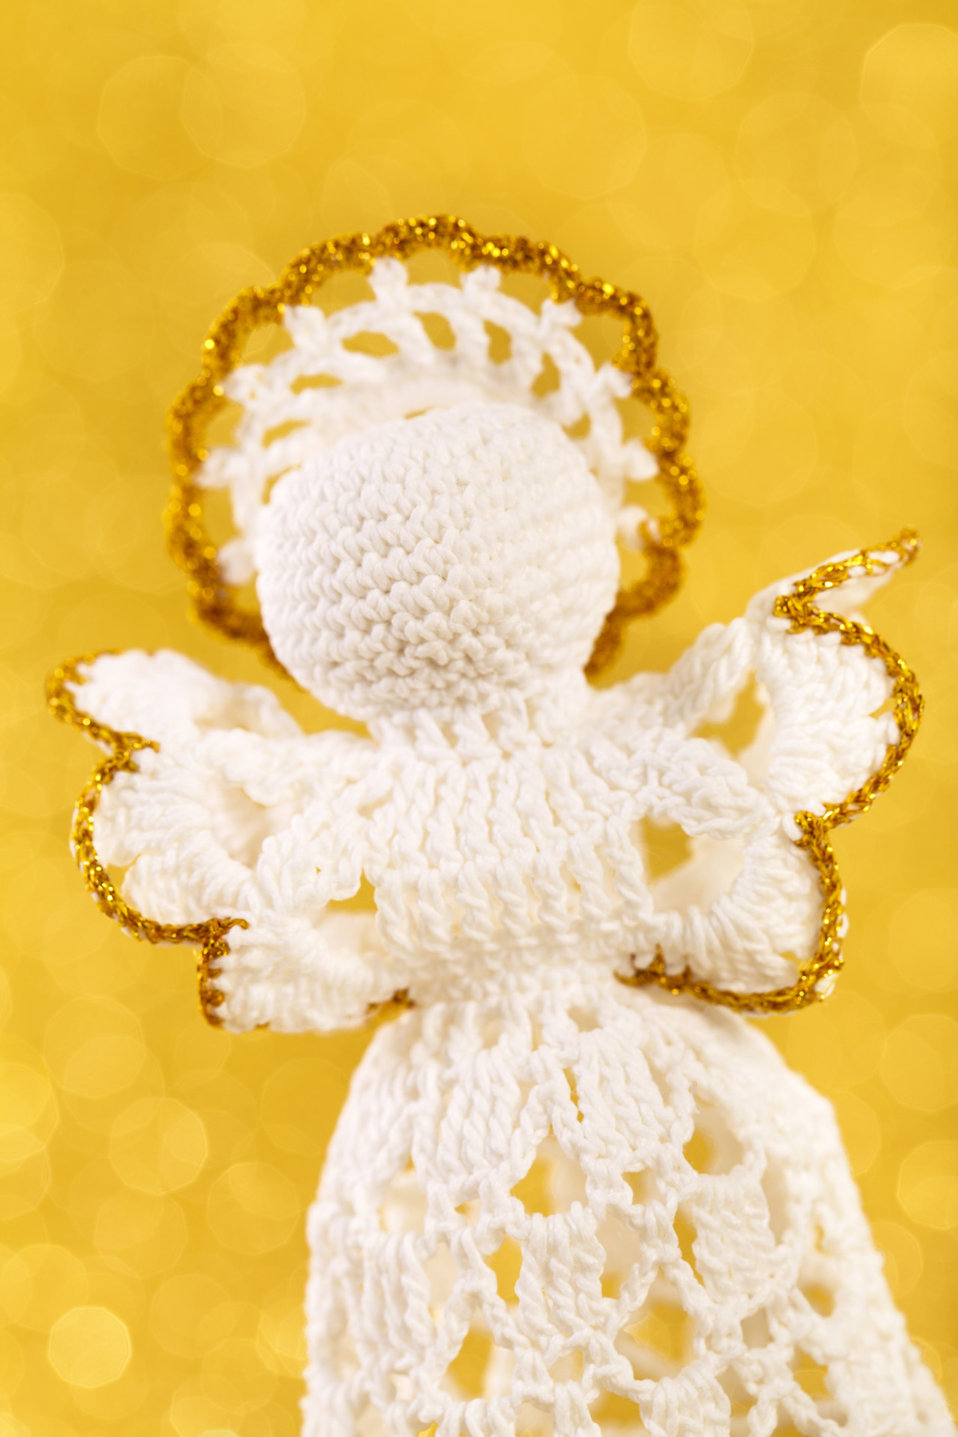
Crochet christmas ornament

White crochet christmas angel on blurred golden background.